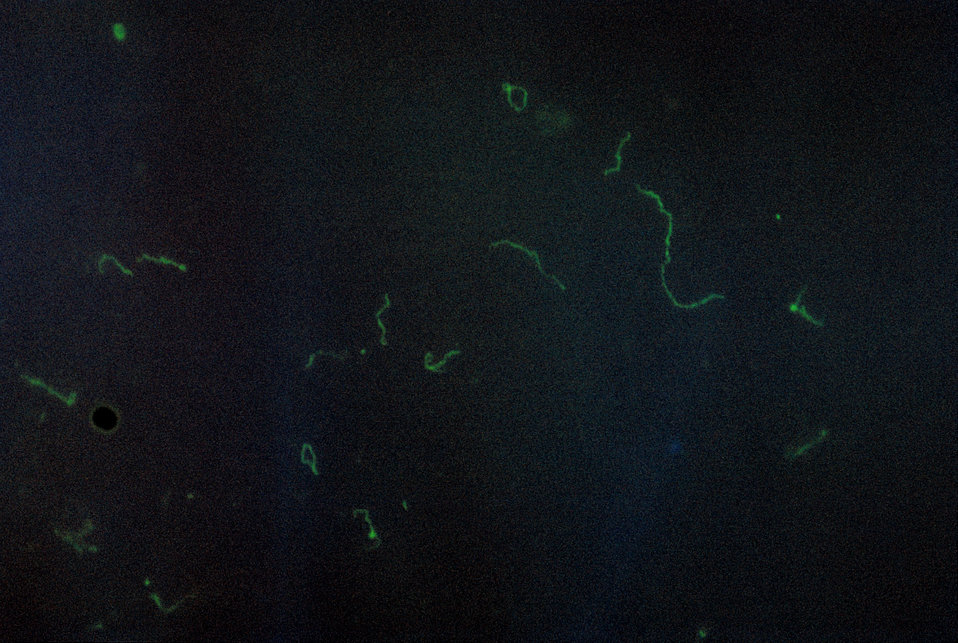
Treponema pallidum, IFA stain for Fluorescent Treponemal Antibody (FTA) antigen.